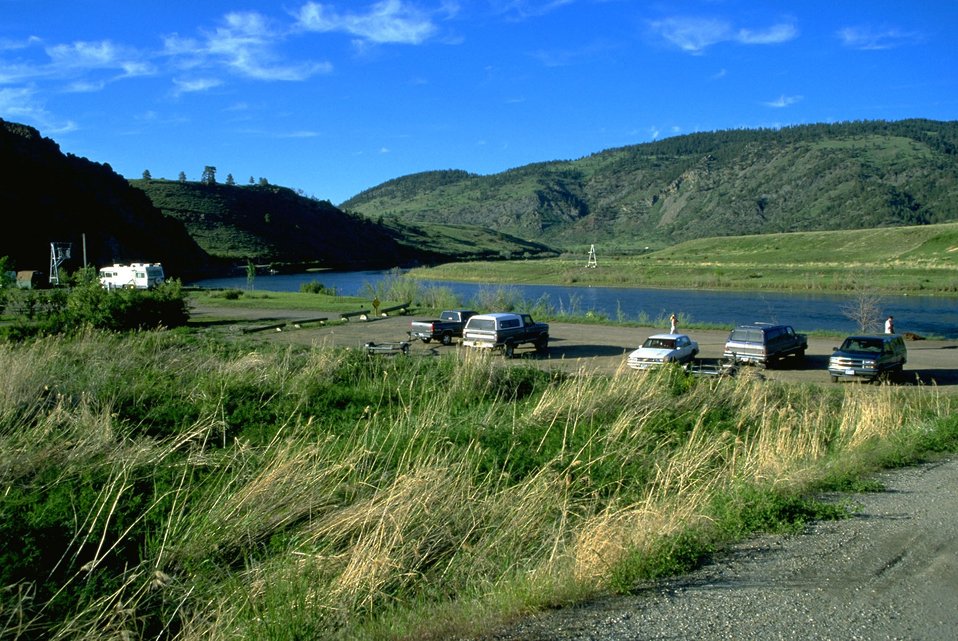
Parking Lot at the Holter Dam Day Use Area